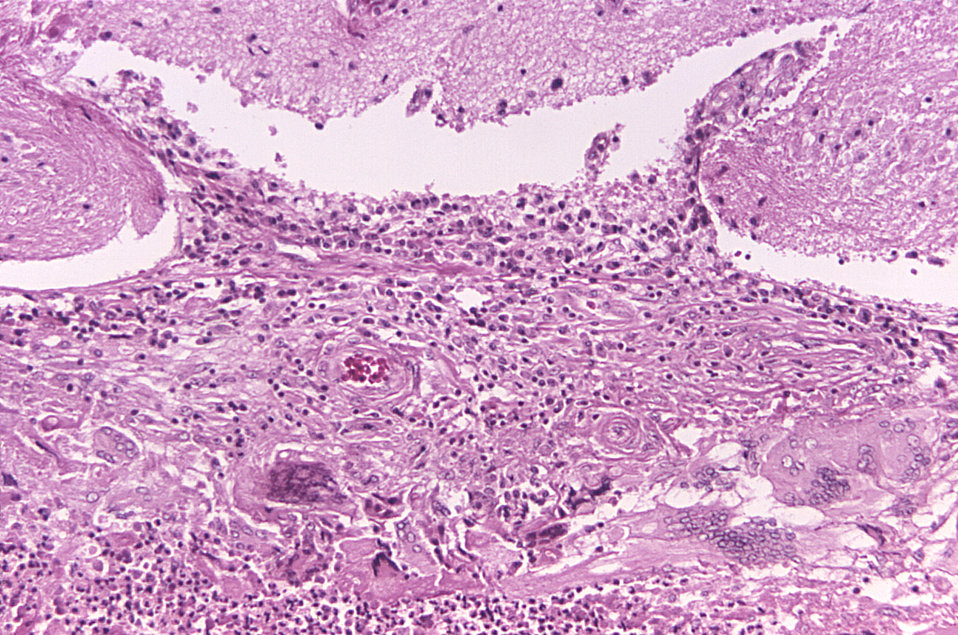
Under a relatively-low magnification of 125X, this photomicrograph of a brain tissue sample revealed some of the histopathologic changes associated with a tissue reation due to the presence of the fungus, Bipolaris hawaiiensis, formerly known as Drechslera hawaiiensis.